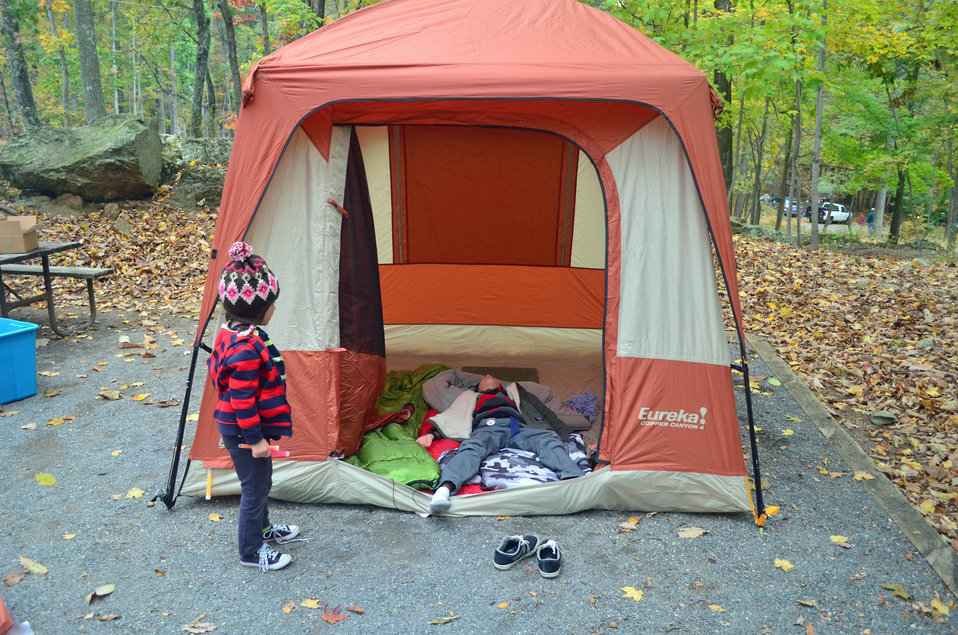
Camping kids 1-a

Clara Chambers (6) watches her brother Owen (9) rest after a long day of adventure during a recent camping trip in a National Forest.